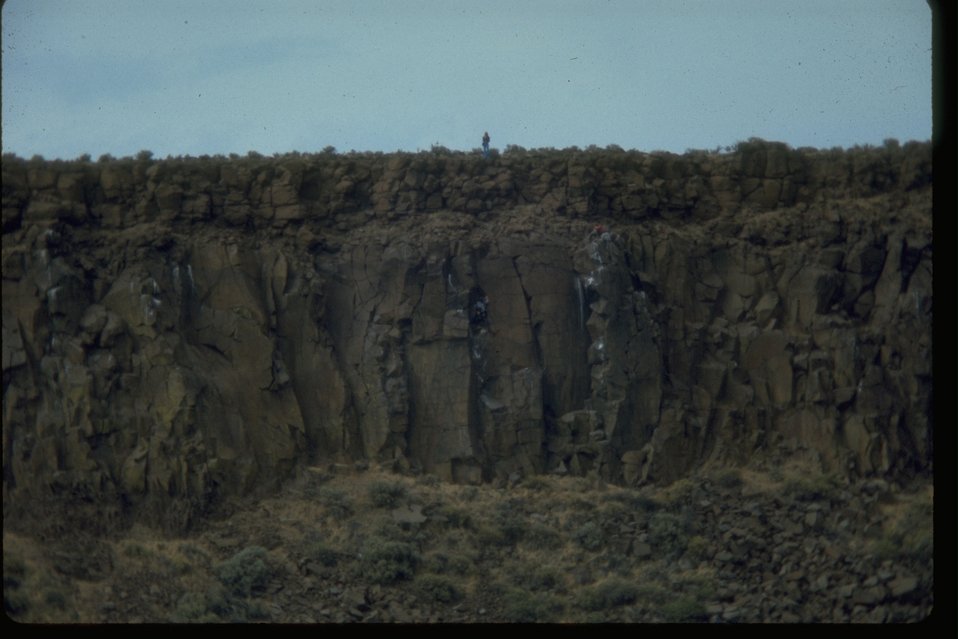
Columnar basalts in Douglas County, Washington.